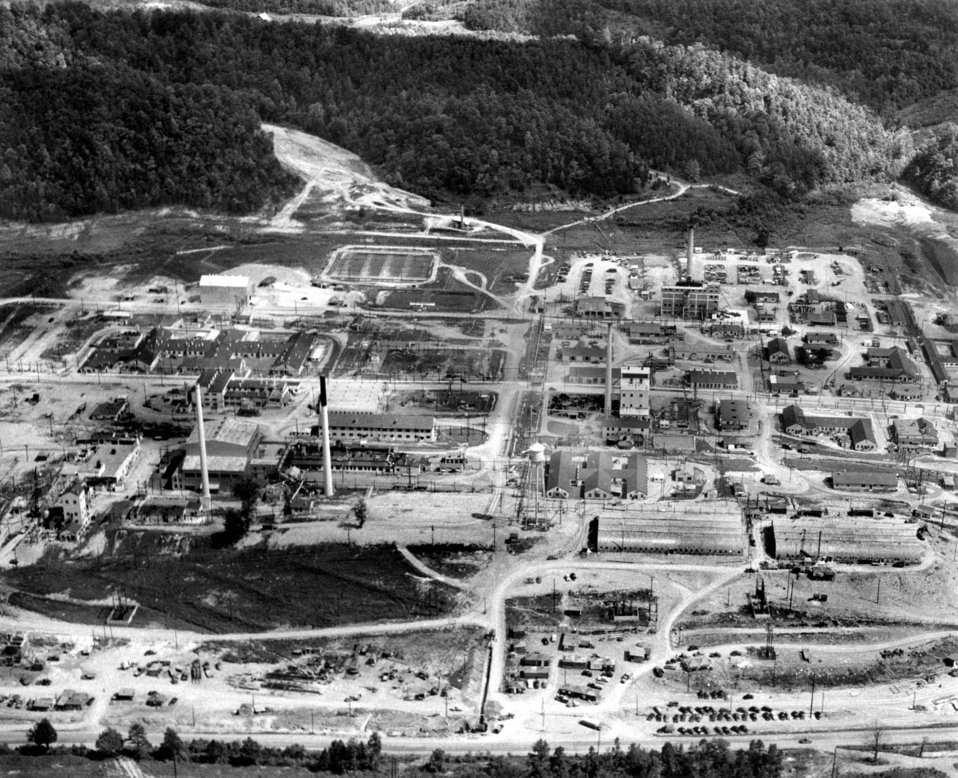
Oak Ridge National Laboratory

5765 DOE photo Ed Westcott 7-22-1948